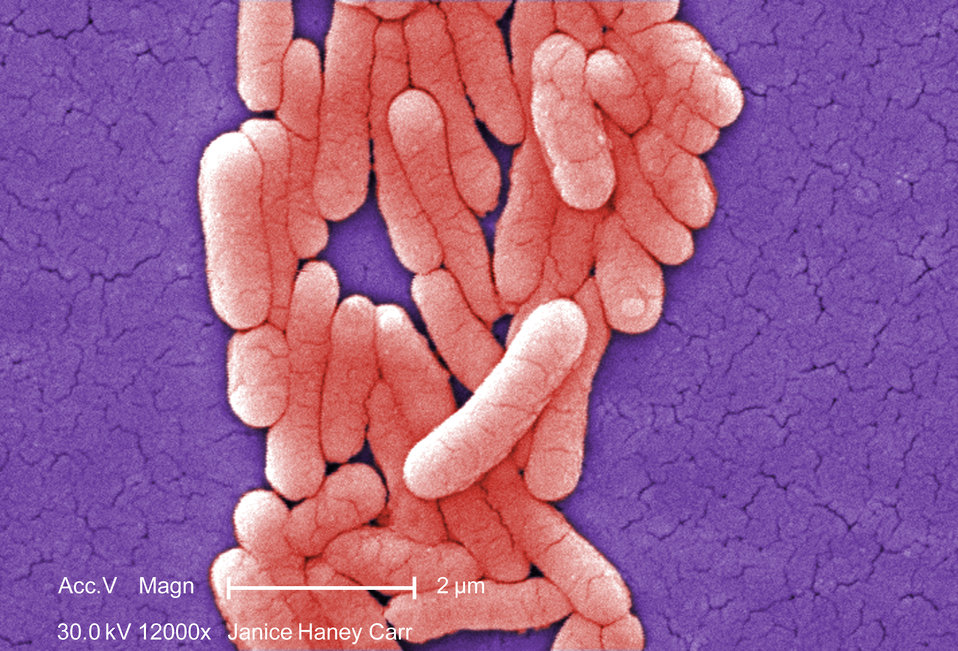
Under a high magnification of 12000X, this colorized scanning electron micrograph (SEM) revealed the presence of numbers of clustered Gram-negative Salmonella typhimurium bacteria, which had been grown in a pure culture. See PHIL 10970 for a black and white version of this image.What sort of germ is Salmonella?